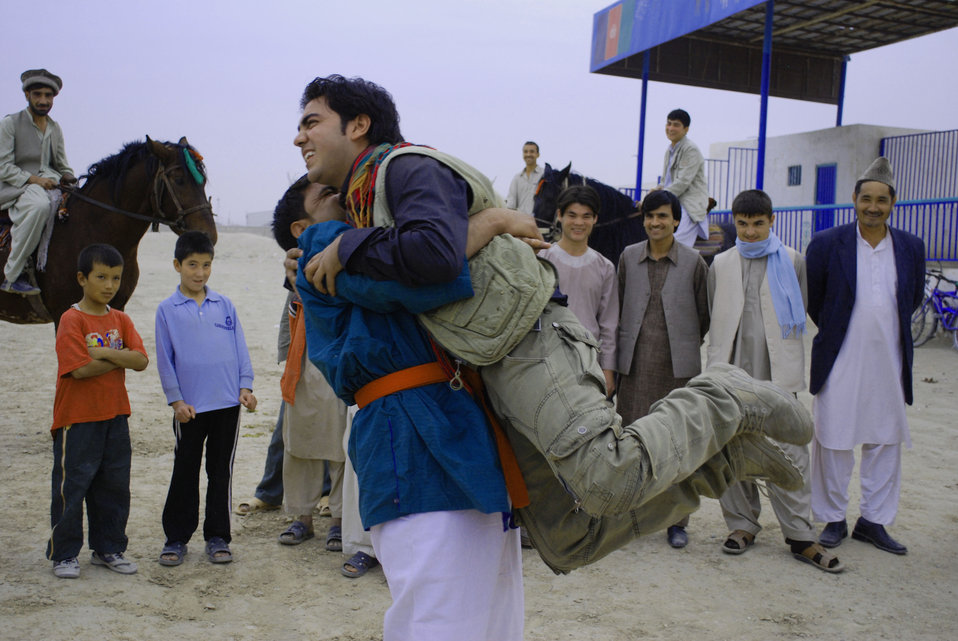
'On the Road' in Balkh Province